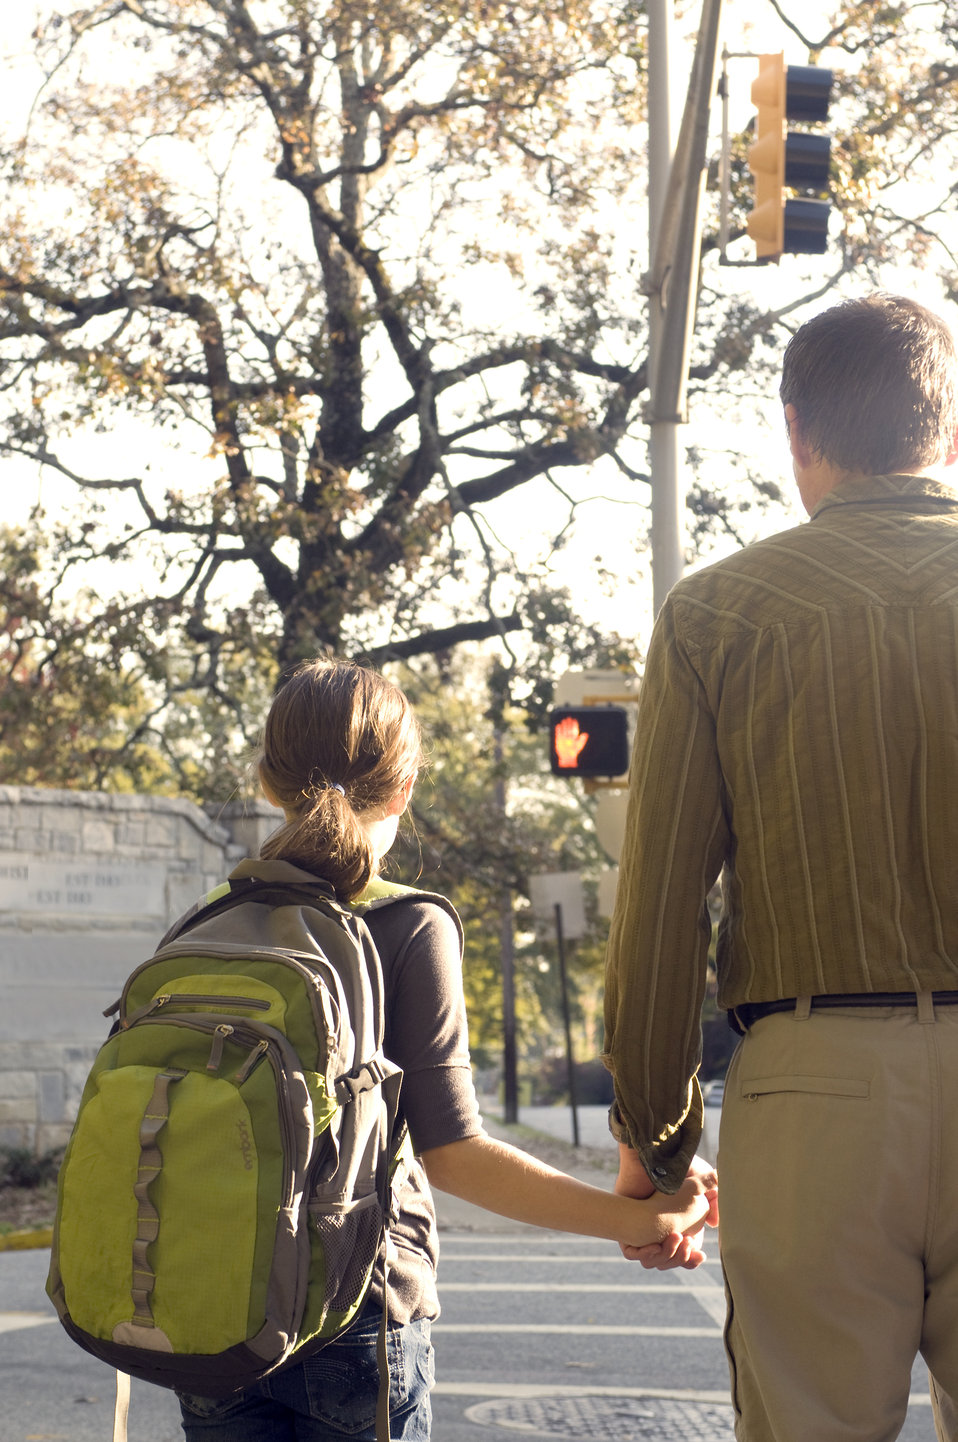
This father was shown walking on a Georgian city street, while to his right, he was holding hands with his young daughter. They had paused at an intersection while waiting for the crosswalk signal to indicate permission to cross the street. Adherence to the rules and regulations governing our roadways, as well as staying alert and focused on the activities taking place all around you, will make for a much safer walking experience, especially on a city street.